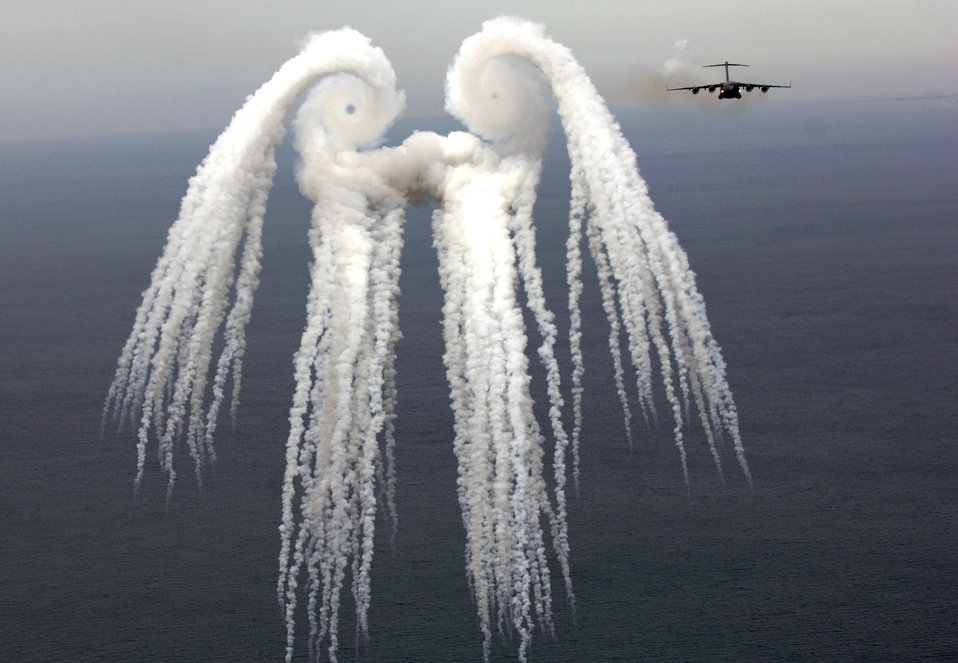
C-17s over Charleston

A C-17 Globemaster III from the 14th Airlift Squadron, Charleston Air Force Base, S.C. releases flares over the Atlantic Ocean near Charleston, S.C., during a training mission on Tuesday, May 16, 2006. The